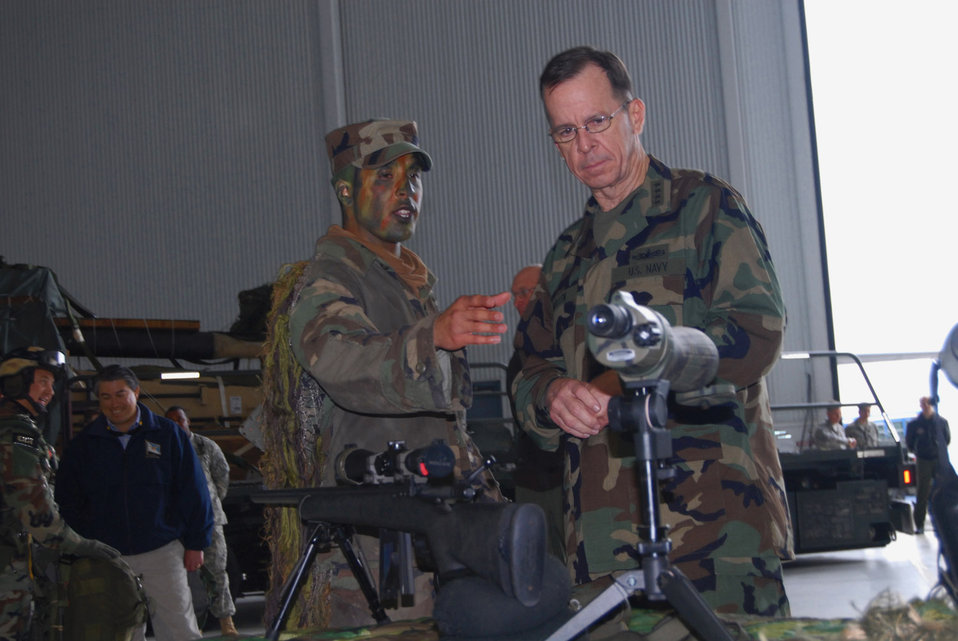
Chairman of Joint Chiefs visits Pope

Staff Sgt. Yamil Roman-Rivera, a 43rd Security Forces Squadron Airman, gives a sniper rifle presentation March 31 to Adm. Mike Mullen, chairman of the Joint Chiefs of Staff, during his visit to Pope Air Force Base, N.C. and nearby Fort Bragg. Airmen from the 43rd SFS also had a military working dog presentation at the expo.